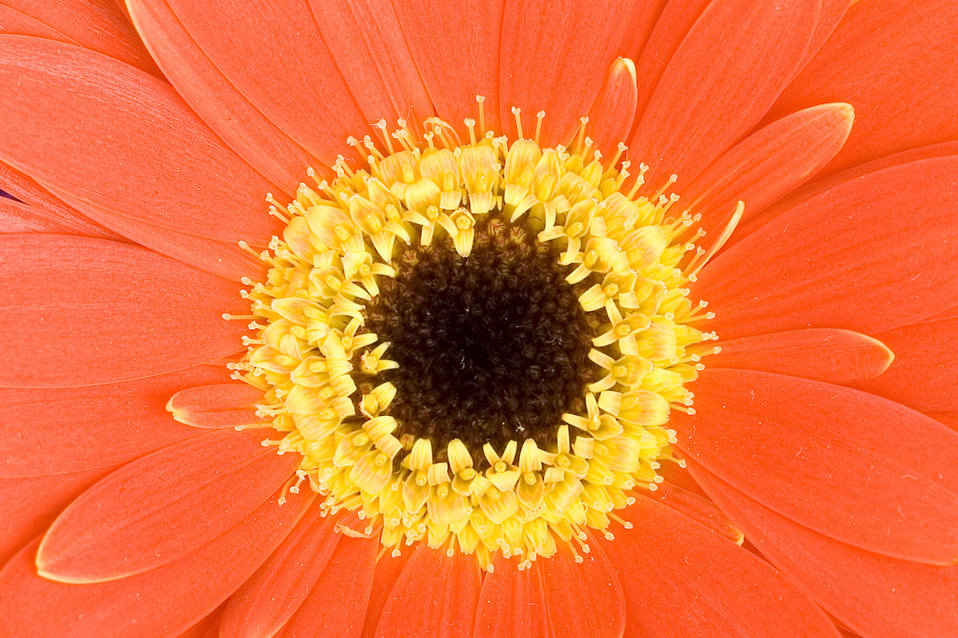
Detail of gerbera

Macro photo of red gerbera.